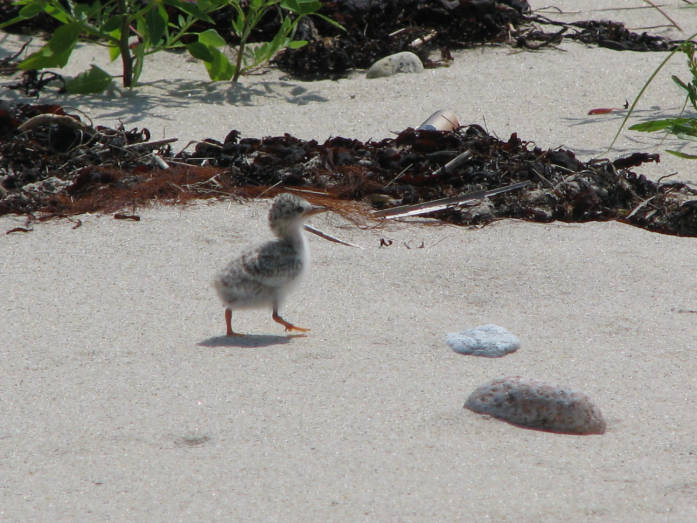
Tern Chick

Sandwich, MA.